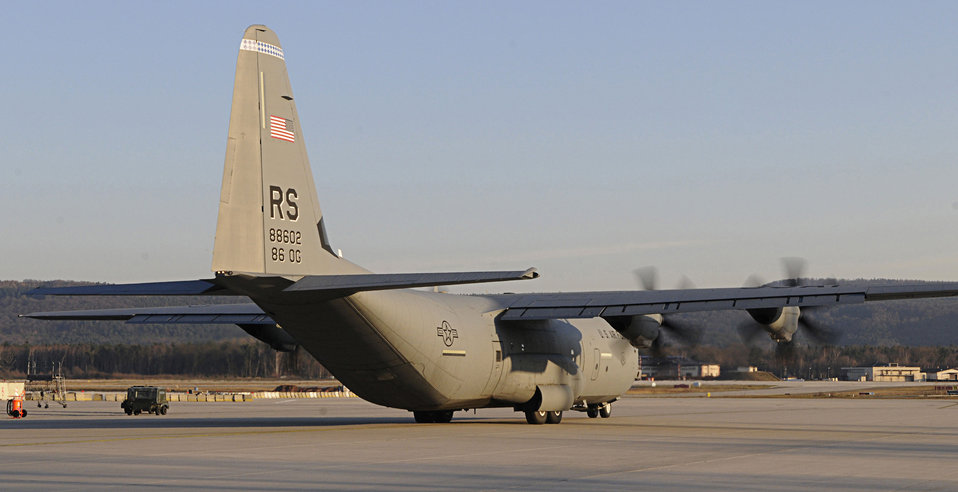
Missions of a C-130 J

U.S. Air Force C-130J taxis toward the runway en route to support Joint Task Force Odyssey Dawn, Ramstein Air Base, Germany, March 21, 2011. Joint Task Force Odyssey Dawn is the U.S. Africa Command task force established to provide operational and tactical command and control of U.S. military forces supporting the international response to the unrest in Libya and enforcement of United Nations Security Council Resolution (UNSCR) 1973. UNSCR 1973 authorizes all necessary measures to protect civilians in Libya under threat of attack by Qadhafi regime forces. JTF Odyssey Dawn is commanded by U.S. Navy Admiral Samuel J. Locklear, III.